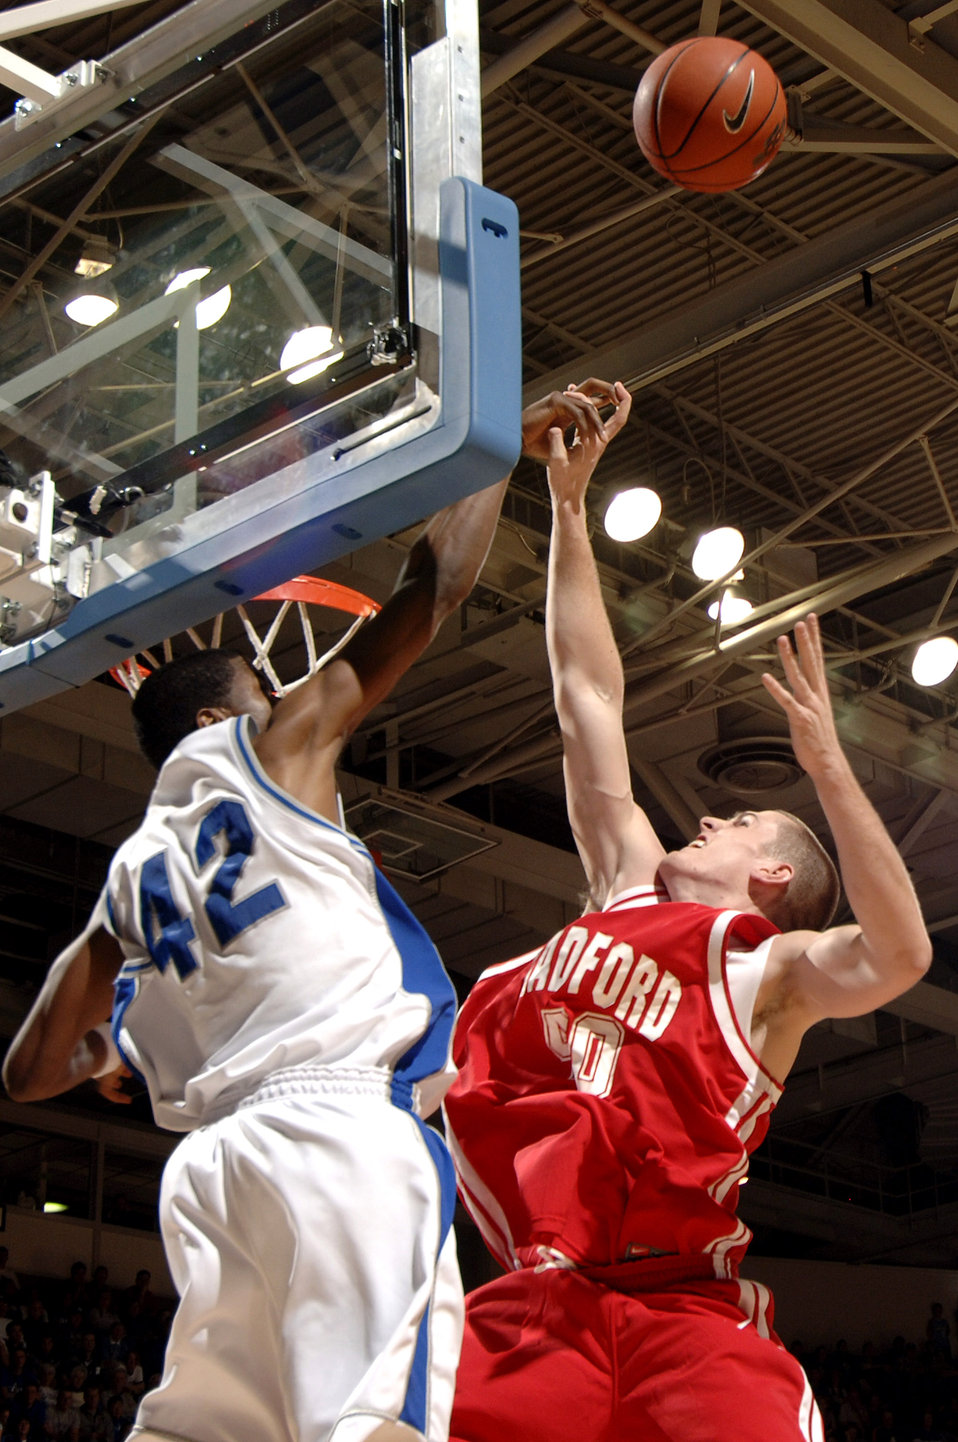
Falcons score overtime victory

Junior guard Andrew Henke blocks a shot as the Air Force Falcons defeated the Radford Highlanders 52-47 in overtime Nov. 19 at Clune Arena. Air Force, under first-year coach Jeff Reynolds, is 4-0 on the season.